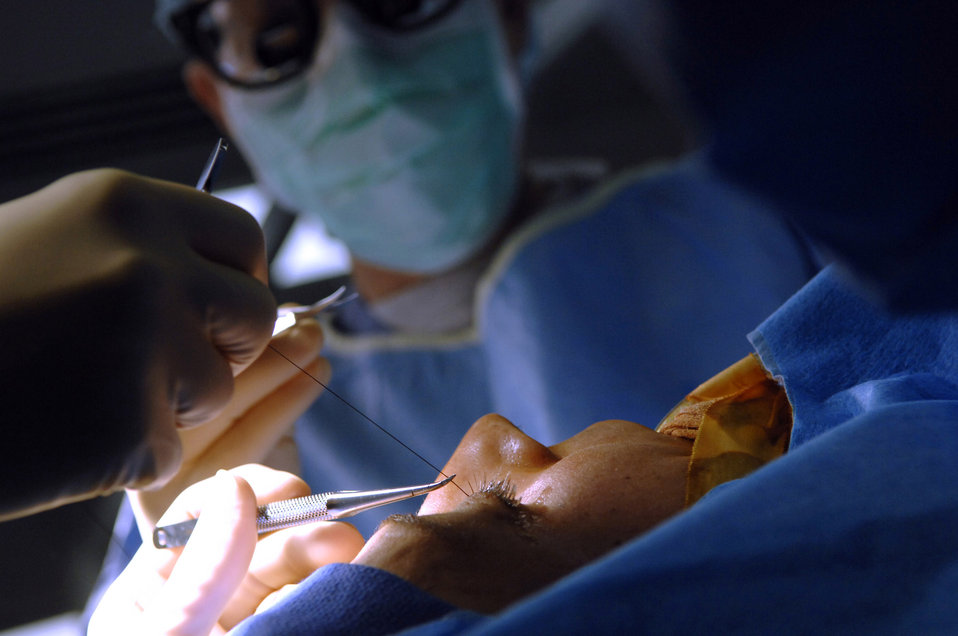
Eye doctors give patients new outlook

Maj. (Dr.) Lisa Mihora prepares to cut a suture during a trauma surgery to repair a patient's eye here July 10. Eye doctors assigned treat twice as many trauma cases helping both Iraqi and American servicemembers. Major Mihora is a 332nd Expeditionary Medical Operations Squadron ophthalmologist.